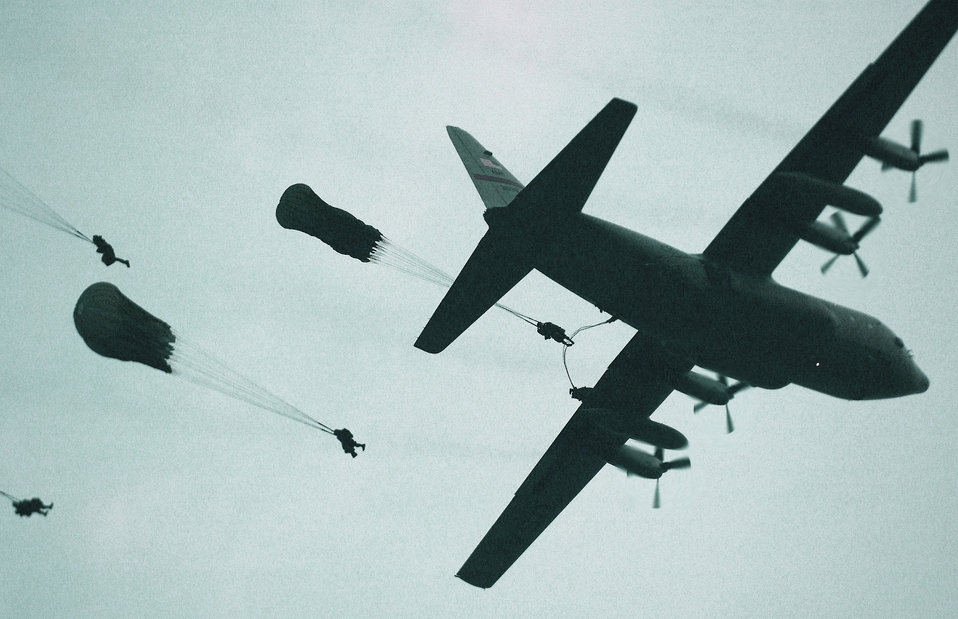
Jump!

FORT BRAGG, N.C. - Army paratroopers jump from an Air Force C-130 Hercules over a drop zone here May 11 during Large Package Week. The event is a joint Army and Air Force airdrop exercise designed to enhance service cohesiveness.